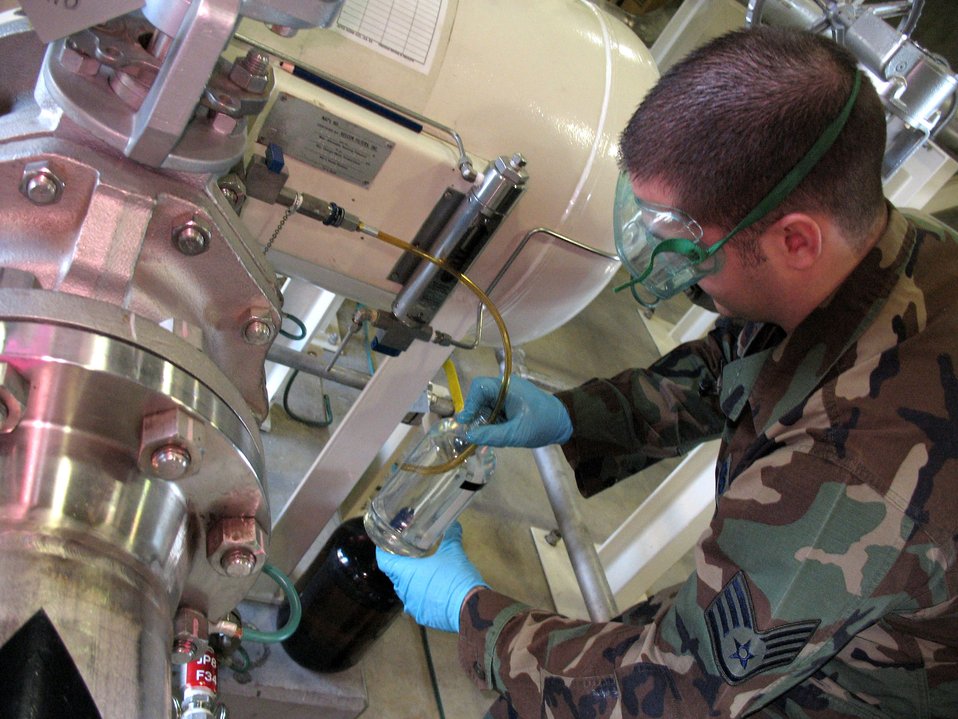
Fuel tests keep Misawa moving

Staff Sgt. Mike Perrino takes a fuel sample from the latest shipment to Misawa Air Base, Japan. Tests need to be run on all the Diesel, JP-8 and MOGAS to come onto base. Sergeant Perrino is the NCO in charge of the 35th Fighter Wing's Fuel Laboratory.